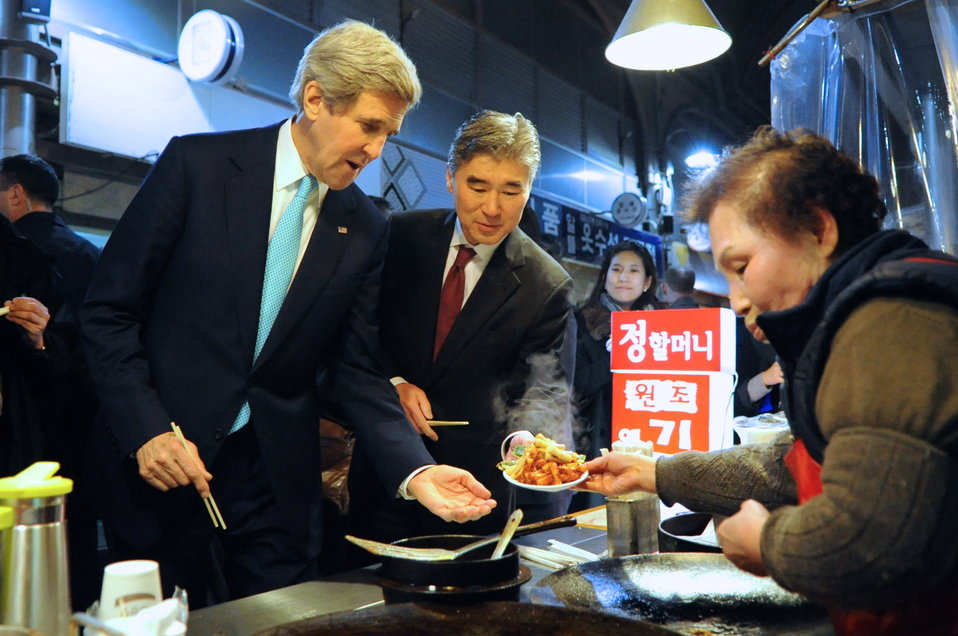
Secretary Kerry and Ambassador Kim Order Fried Rice Cake in Seoul Market

U.S. Secretary of State John Kerry and U.S. Ambassador to the South Korea Sung Kim receive an order of freshly fried Korean rice cakes during a stop at the Tong-in Market in Seoul, South Korea, on February 13, 2014.